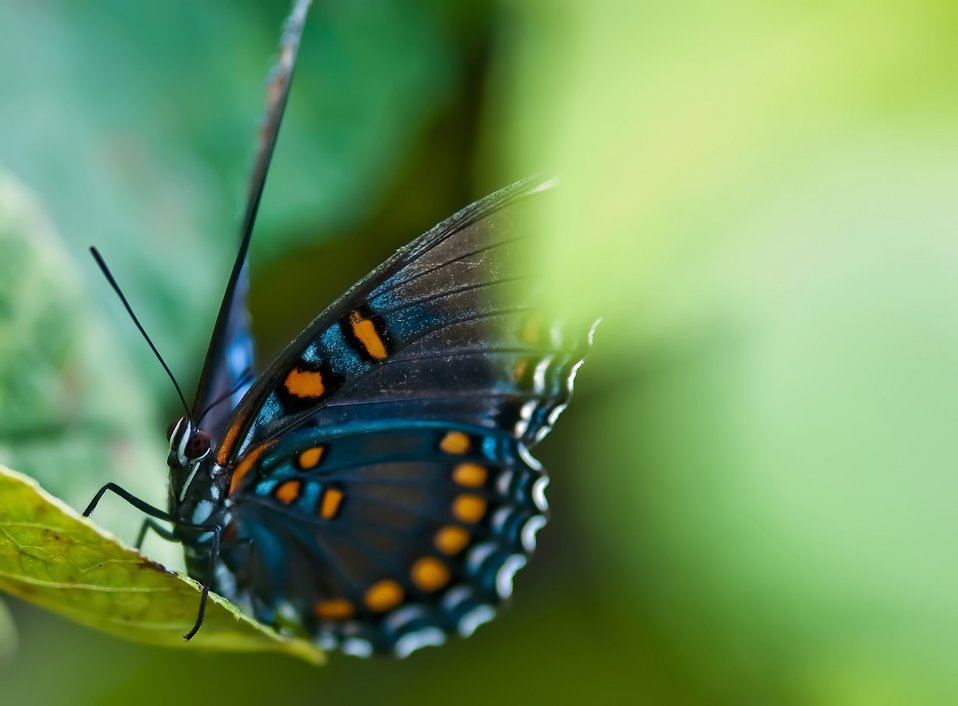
Butterfly on leaves.